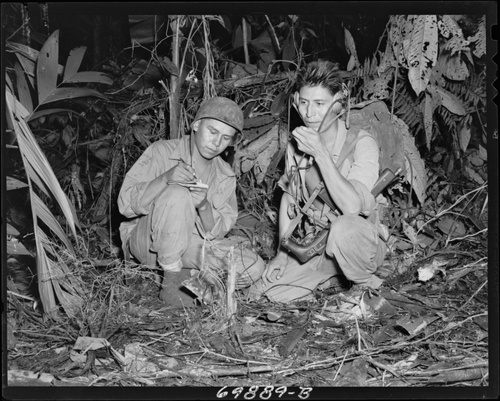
There when needed

Navajo Indian Code Talkers Henry Bake and George Kirk from December 1943.